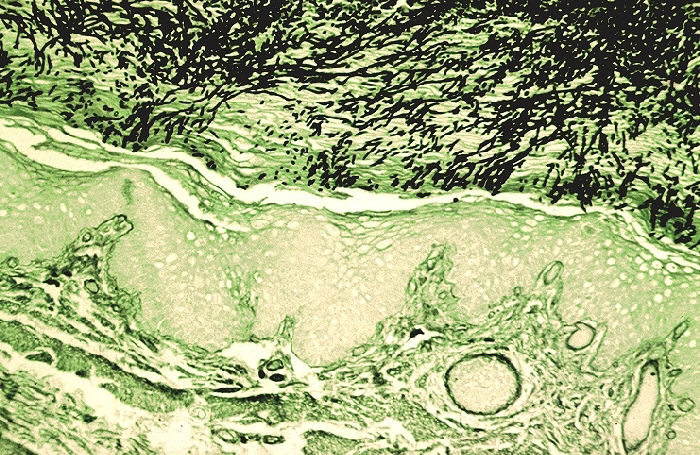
Histopathology of Candida esophagitis. Methenamine silver stain (digitally colorized).